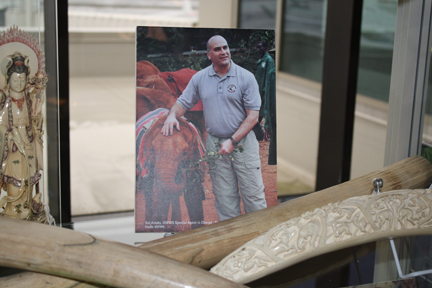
Sal Amato and Ivory Tusks

Ivory tusks and a photo of Sal Amato, Northeast Region Law Enforcement Special Agent in Charge, at an elephant orphanage in Kenya.